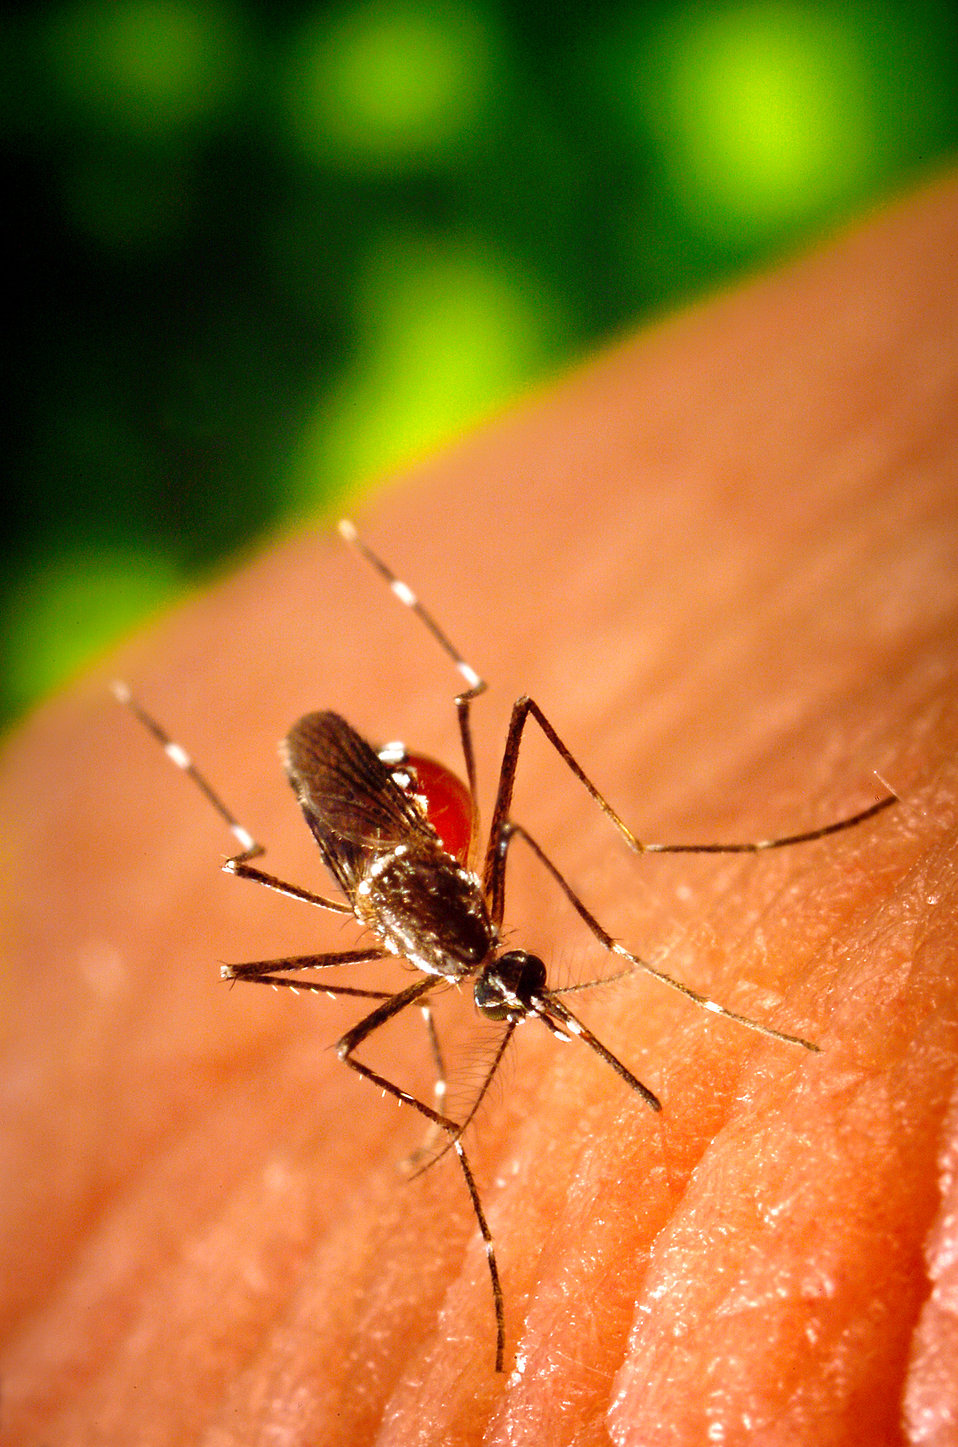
This 2006 image depicted a female Aedes aegypti mosquito as she was obtaining a blood-meal from a human host through her fascicle, which after penetrating the host's skin, had reddened in color, reflecting the blood's coloration through this tubular structure. In this case, what would normally be an unsuspecting host was actually the CDC's biomedical photographer's own hand, which he'd offered to the hungry mosquito so that she'd alight, and be photographed while feeding. As it filled with blood, the abdomen became distended, stretching the exterior exoskeletal surface, thereby, causing it to become transparent, allowing the collecting blood to become visible as an enlarging intra-abdominal red mass, as is the case in PHIL# 9175, and 9176.